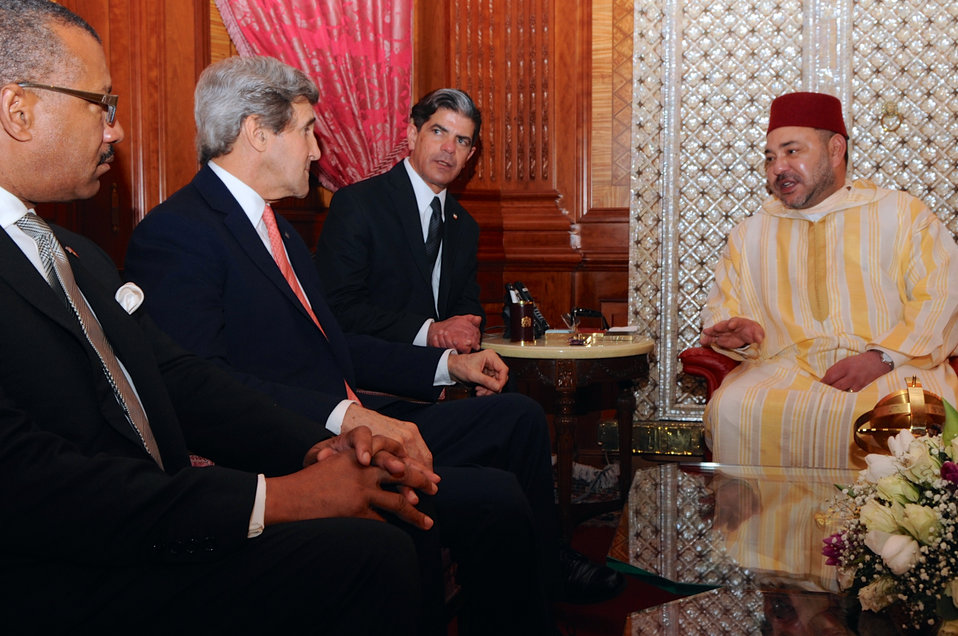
Secretary Kerry Meets With King Muhammed VI of Morocco in Casablanca

U.S. Secretary of State John Kerry, flanked by U.S. Ambassador to Morocco Dwight Bush and State Department interpreter Thomas Ronkin, is greeted by King Muhammed VI of Morocco at the start of a bilateral meeting in Casablanca on April 4, 2014.